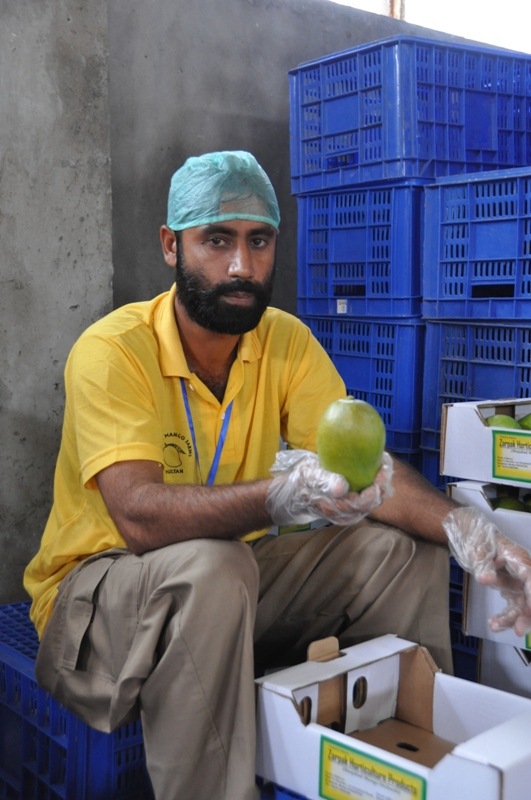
EG Firms